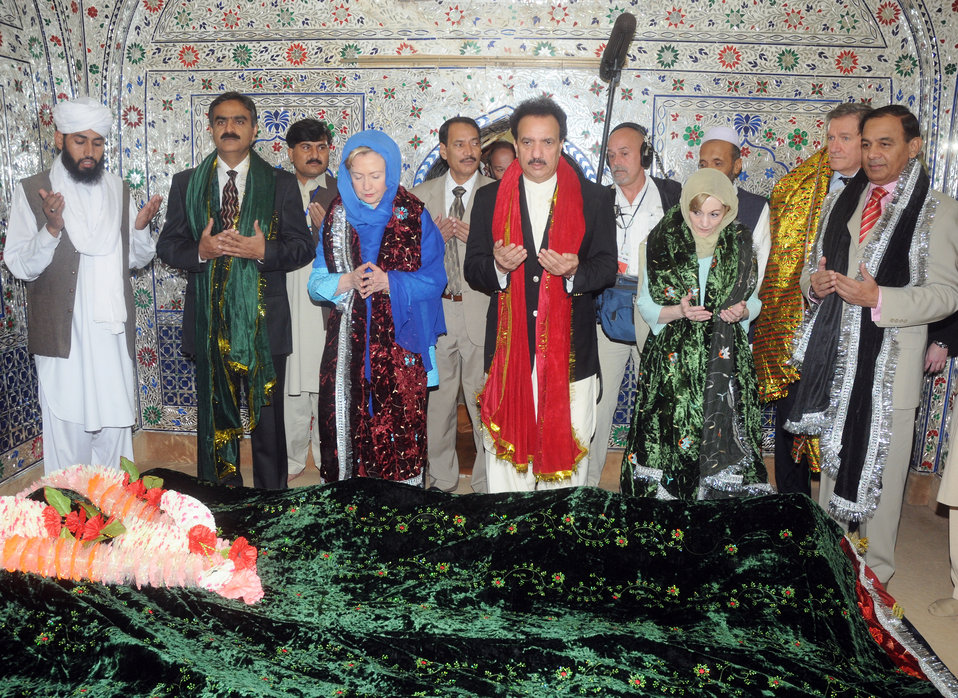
Secretary Clinton Visits Shrine of Shah Abdul Latif Kazmi

U.S. Secretary of State Hillary Rodham Clinton and her delegation observe a moment of silence at the shrine of Sufi Saint Shah Abdul Latif Kazmi, Bari Imam, near Islamabad, Pakistan October 28, 2009.